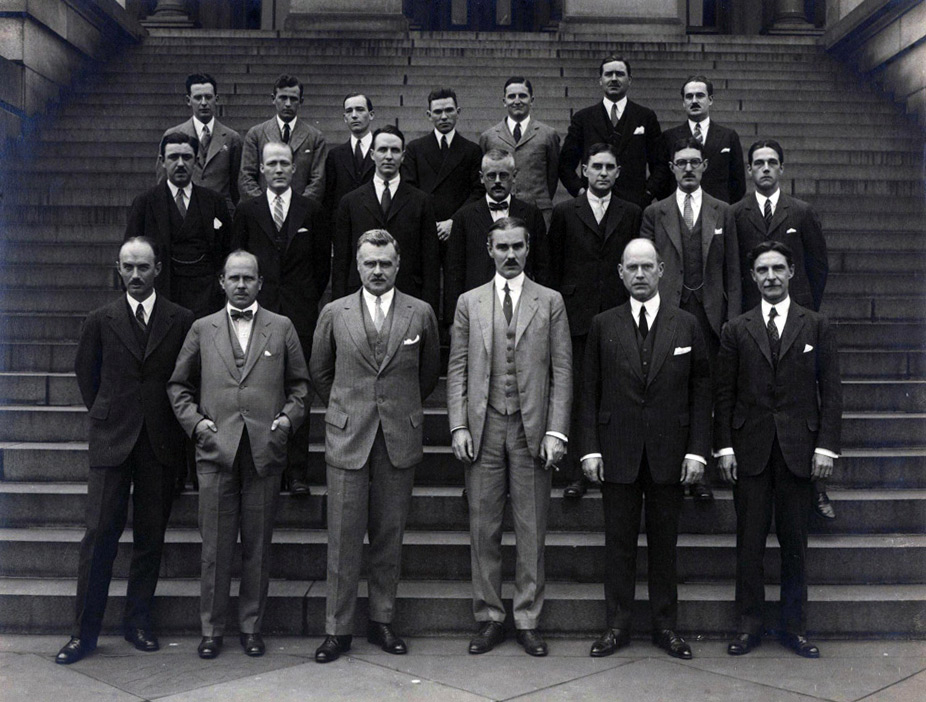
The Second Graduating Class of the U.S. Foreign Service Is Pictured in 1925

The second graduating class of the Foreign Service under the Rogers Act is photographed in Washington, D.C., in September 1925. With the passage of the Rogers Act establishing the current merit-based, professional Foreign Service, the modern Foreign Service was created on May 24, 1924. On May 22, 2014, U.S. Secretary of State John Kerry delivered remarks at an event celebrating the 90th anniversary of the U.S. Foreign Service.